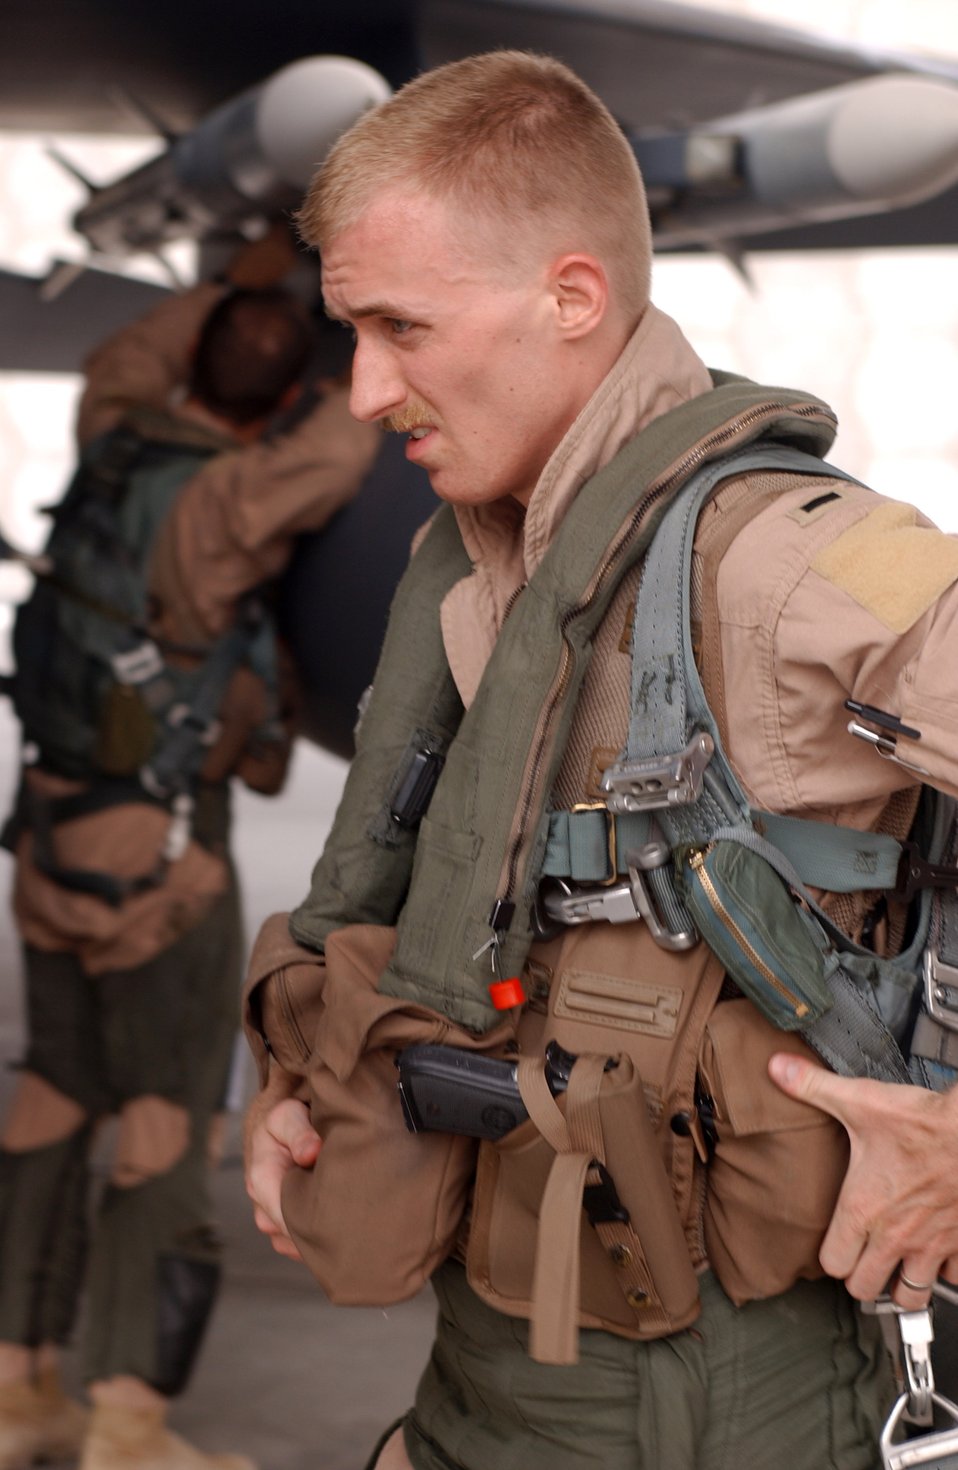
Combat mission

First Lt. Nathan Rivinius prepares to board his F-15E Strike Eagle before a combat mission from a forward operating base in Southwest Asia Aug. 18. Lieutenant Rivinius is a weapons systems officer deployed to the 335th Expeditionary Fighter Squadron from Seymour Johnson Air Force Base, N.C.